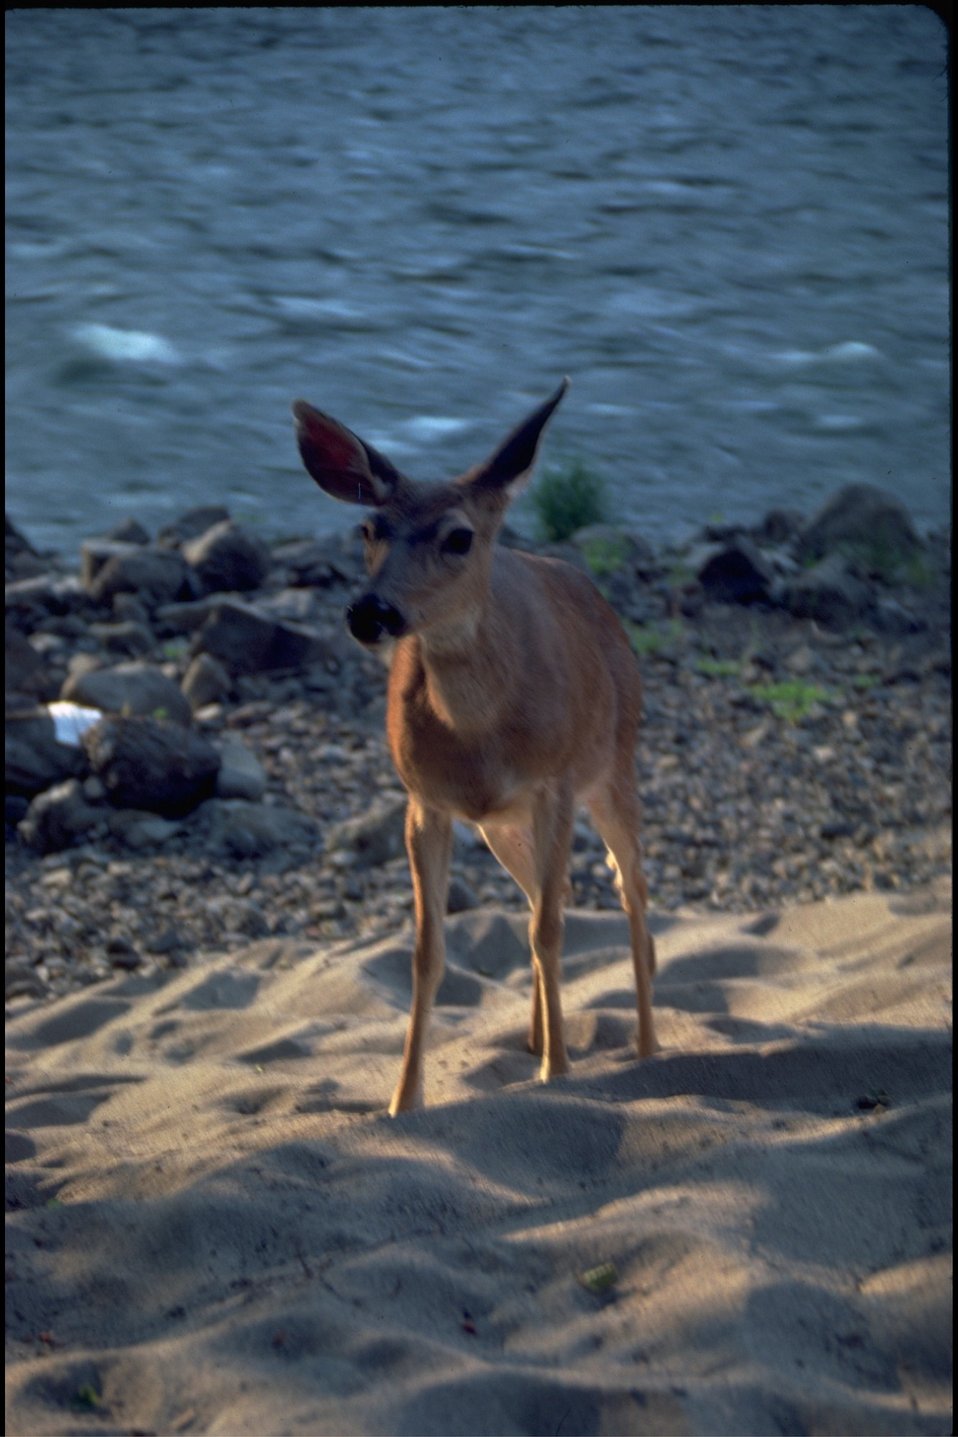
Rogue River - Black Tailed Deer